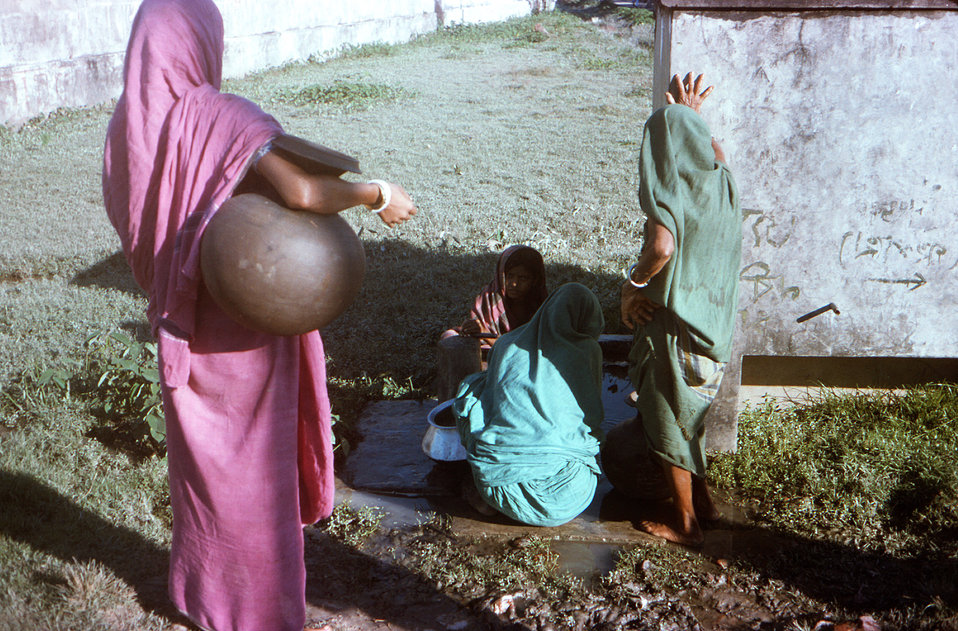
This October, 1975 image depicted a number of Bangladeshi village women, as they were gathered at a Patuakhali Town communal well. This site was located in the Patuakhali District of South-western Bangladesh.